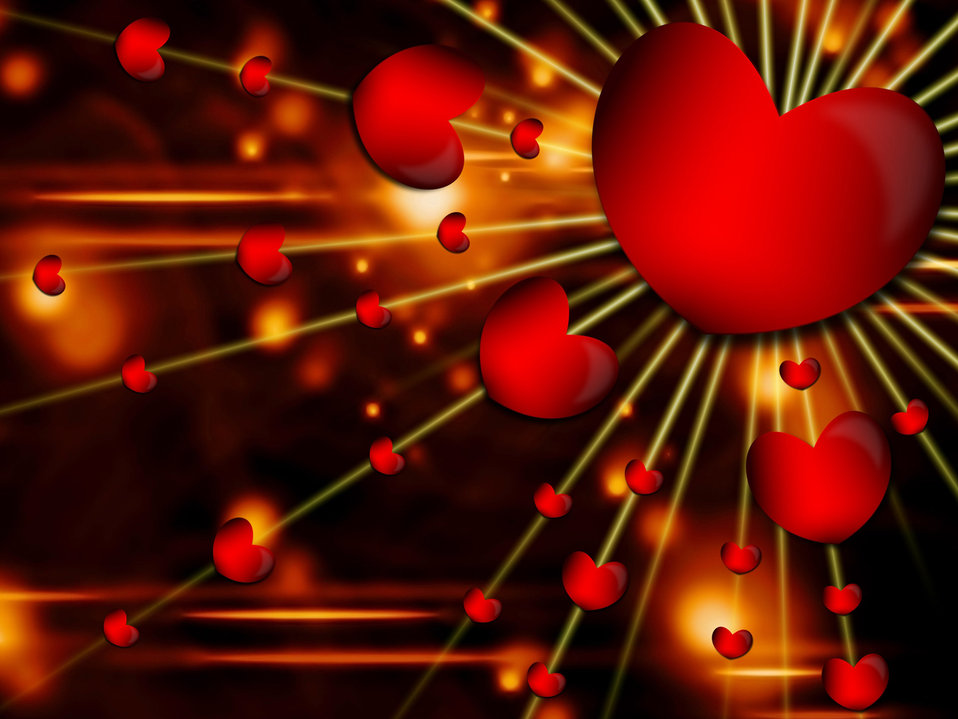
Love hearts

Background.